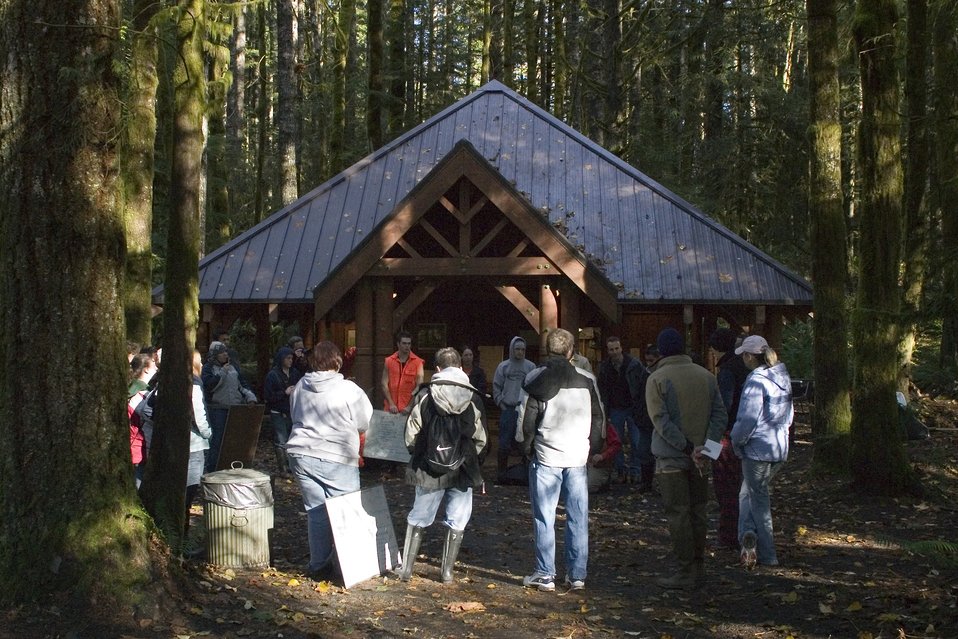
The Salmon River Shelter is used during the spring and fall by Wolftree and other groups for environmental education. Here the Reynolds Natural Resources Academy 12 and 11th grade students summarize there days activities.